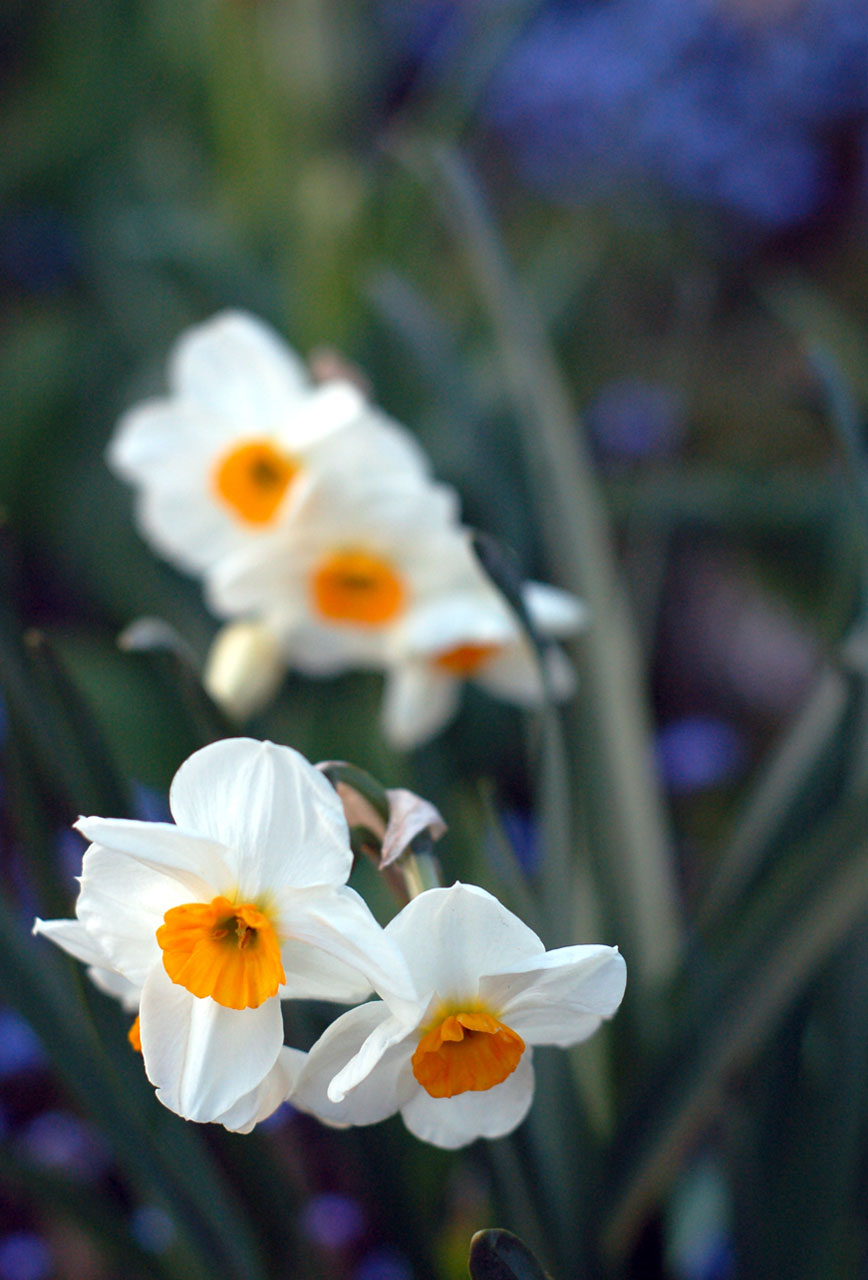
White spring flowers

White daffodils in the garden.